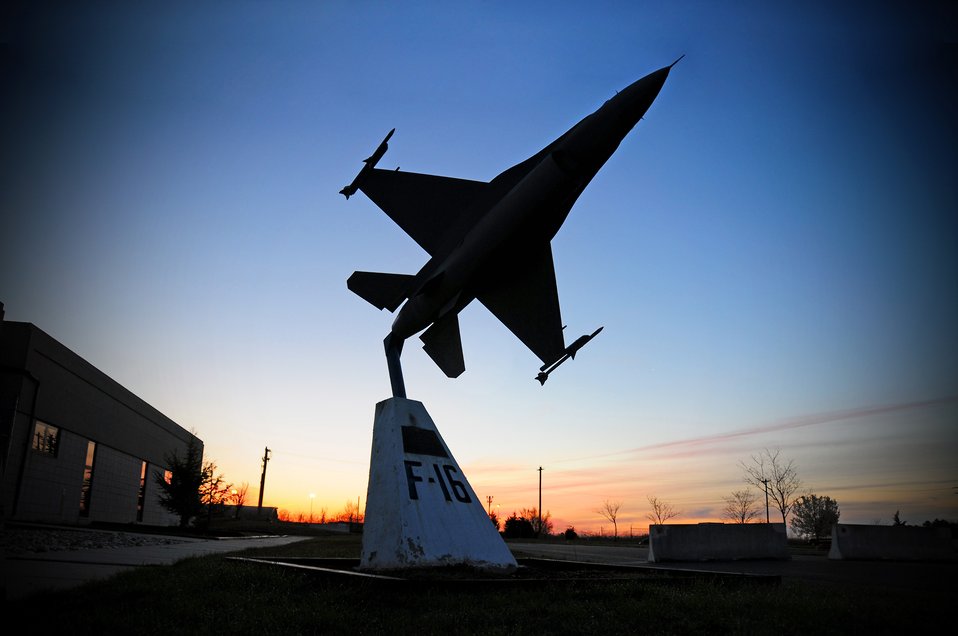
Falcon Sunrise

A scale model of an F-16 C Fighting Falcon is displayed in front of the Headquarters Building at the 177th Fighter Wing, NJANG on April 16th, 2009. The 177th Fighter Wing is located at Atlantic City IAP, NJ.